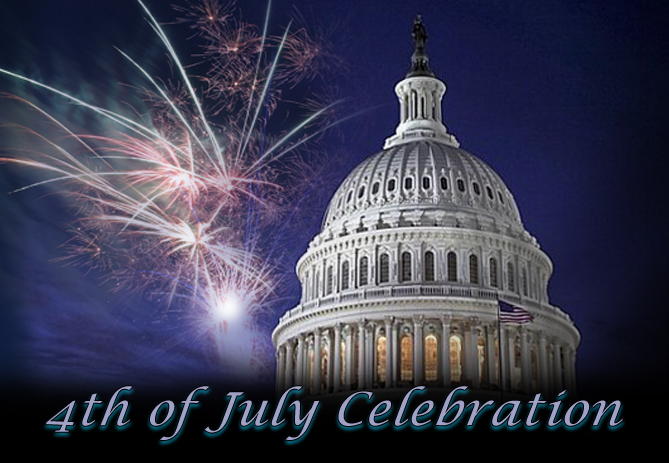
Happy Fourth of July!